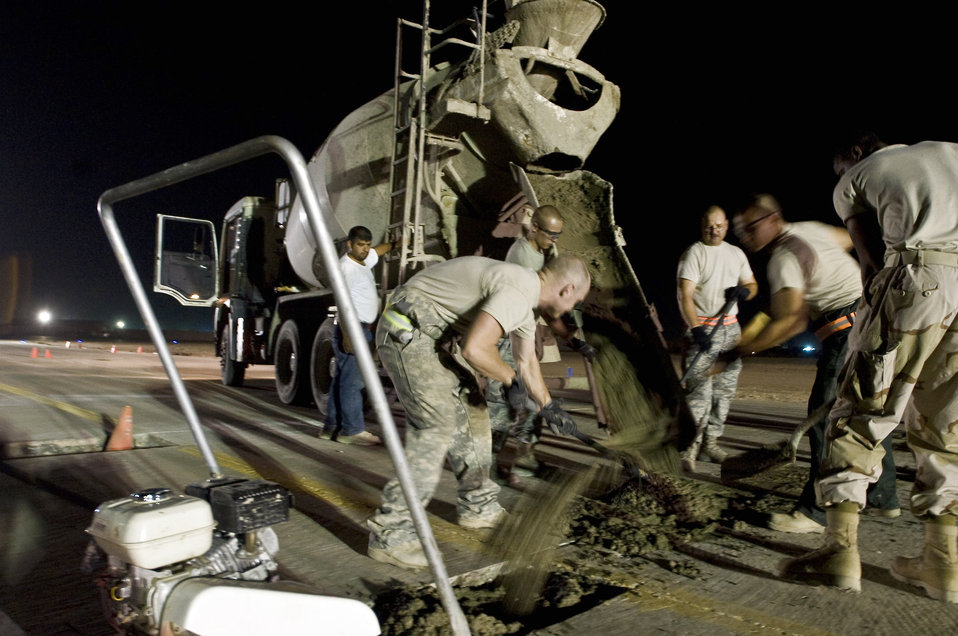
Solid foundation

Airmen with the 407th Expeditionary Civil Engineer Squadron repair a section of runway Sept. 22 at Ali Base, Iraq. Extreme heat, along with normal wear and tear, can damage portions of the flightline, making it unsafe for aircraft.